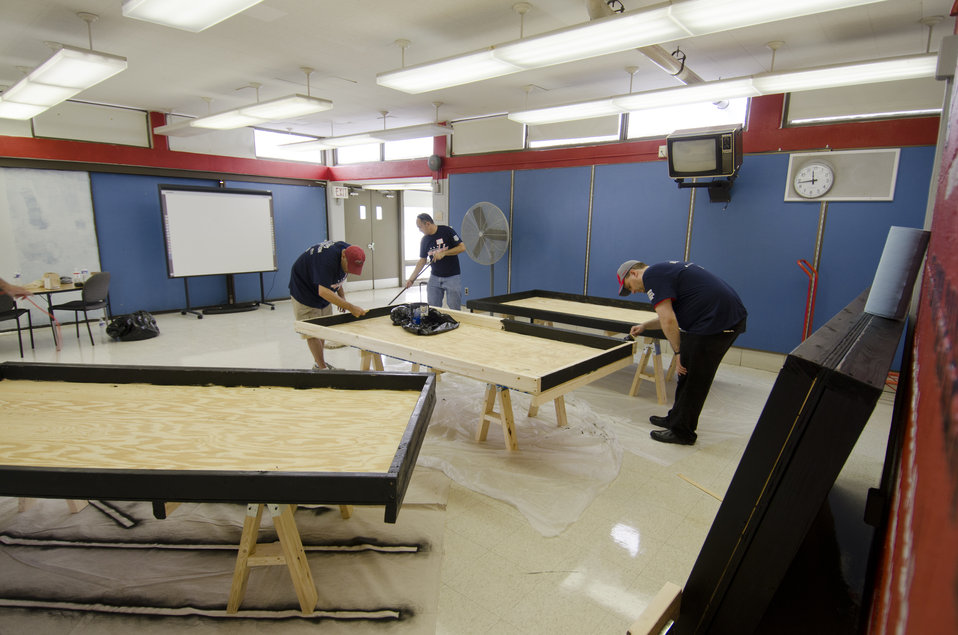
U.S. Department of Agriculture (USDA) People’s Garden Executive Master Gardeners, friends, and family, along with Washington Capitals fans are volunteering in District of Columbia Public Schools’ (DCPS) Beautification Day, on Saturday, August 25, 2012, at Thurgood Marshall Elementary School, in Washington, D.C. Each year people are invited to help “spruce up” public school facilities in preparation for the first day of school. More than 70 volunteers pitched in at this large school facility. The People’s Garden effort involves building and painting raised planter boxes, then preparing the soil mixture so they are “ready to grow.” Additionally, a team that includes descendants of U.S. Supreme Court Justice Thurgood Marshall assembles a prefabricated garden toolshed. The Justice’s son, John Marshall leads the team, which includes Brianna the Justice’s great-grand daughter in one of many multi-generational efforts at this school today. Washington Capitals Forward Mike Riberio, his family and mascot Slapshot participated in every project underway at Marshall School. From the outside gardens, to inside mural painting, and robotics worktable construction, the teams made their goals.